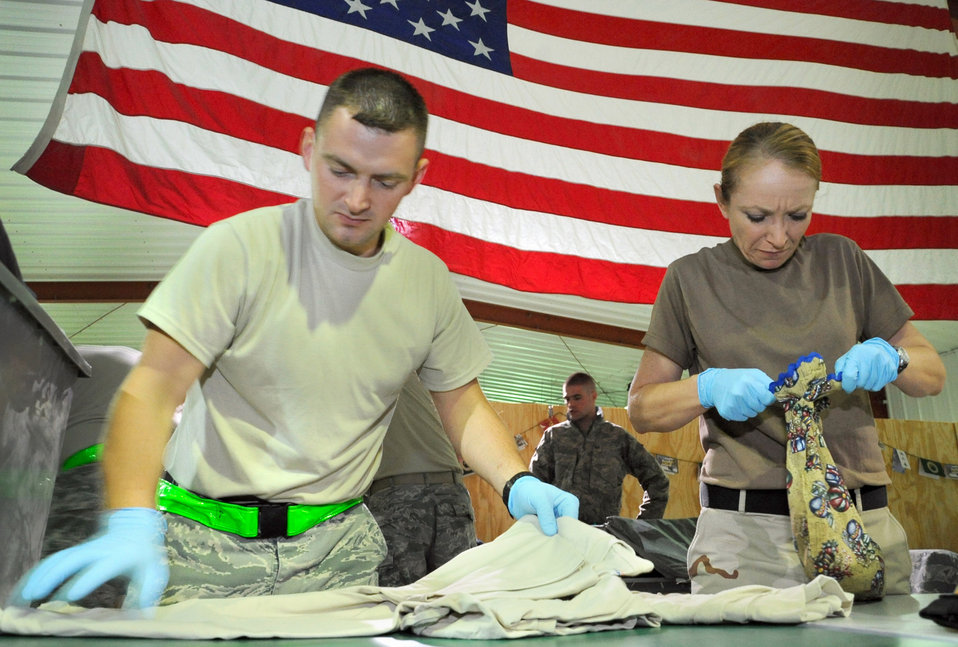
386th AEW customs

Staff Sgt. Jacob Byers and Navy Petty Officer 2nd Class Chandra Merritt check through a service member's luggage as part of the customs process Dec. 21, 2010, in Southwest Asia. Officials from the 386th Air Expeditionary Wing were able to cut down the redeployment process with the implementation of an all-Air Force customs process, a first in the Air Force Central Command area of responsibility.